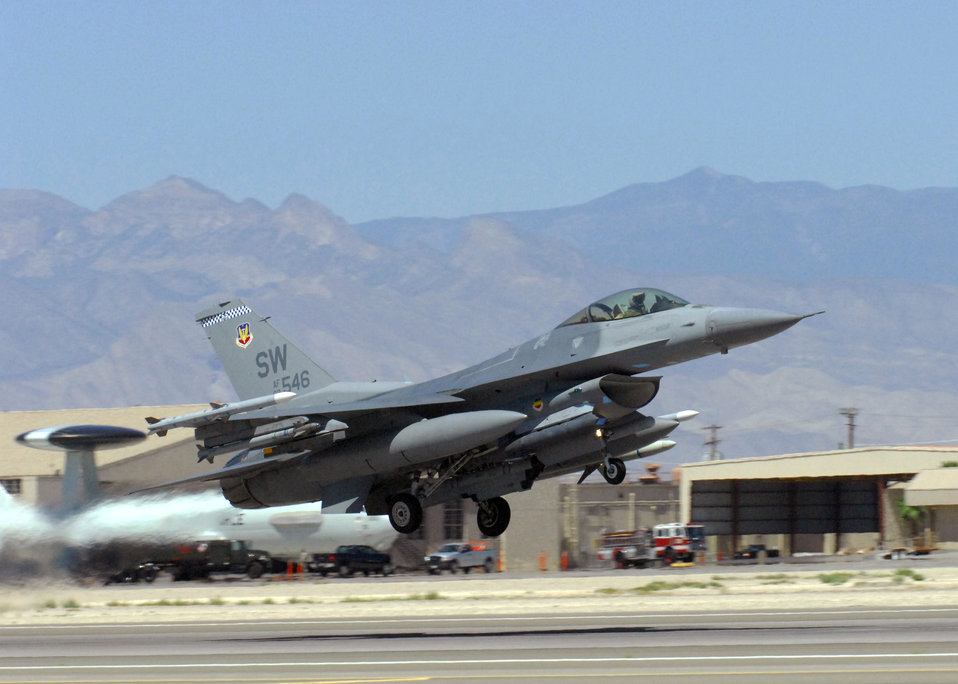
PAF and Red Flag

An F-16 Fighting Falcon from the 77th Fighter Squadron takes off from the runway for Exercise Red Flag July 21, 2010, at Nellis Air Force Base, Nev. Red Flag is a realistic combat training exercise involving the air forces of the U.S. and its allies.